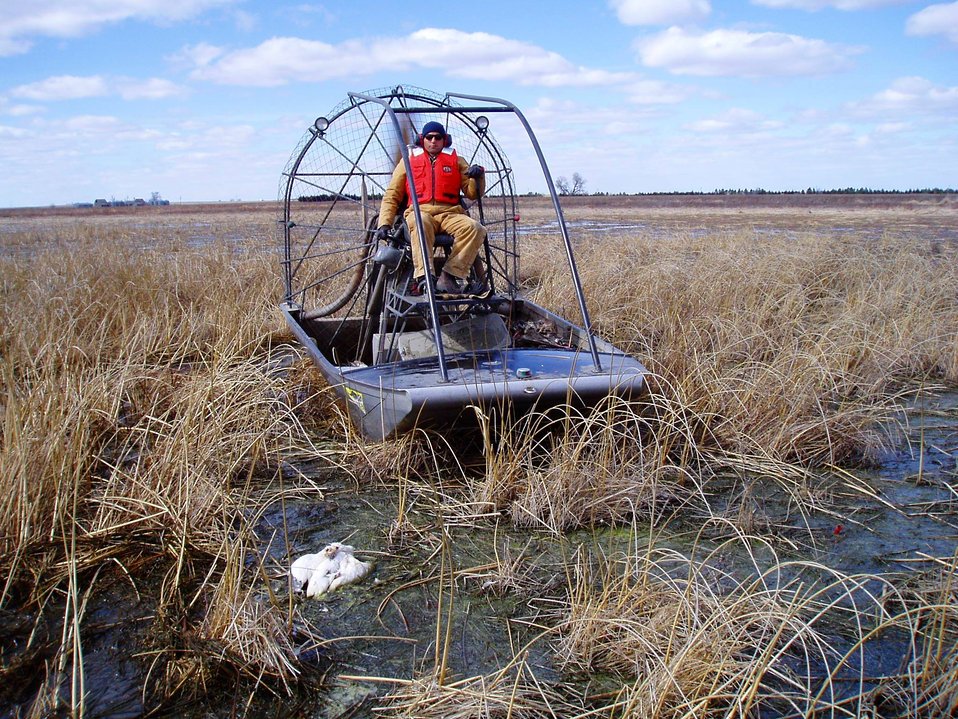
Avian Cholera Pickup with Airboat

Jeff Drahota operating an airbout during an avian cholera clean up mission on Harvard WPA, NE.

Taken: March 2005